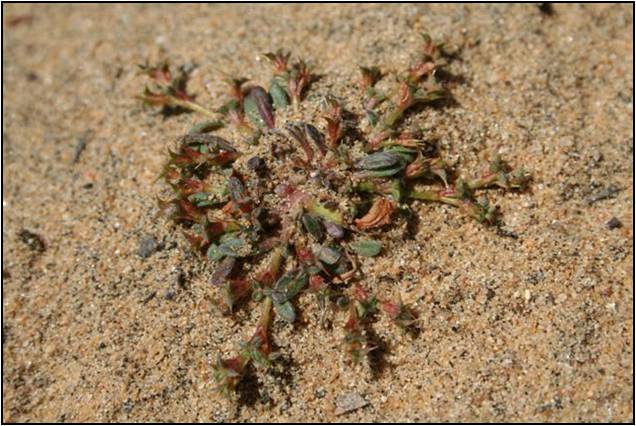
Orcutt's spineflower (Chorizanthe orcuttiana)

This a small (1-15 cm) annual plant species known to be found only in San Diego County, California. It's clustered flowers are small and each produces a single seed. Listed as federally endangered, this plant prefers habitat within southern maritime chaparral or associated coastal sage scrub. Photograph taken at Naval Base Point Loma, CA.